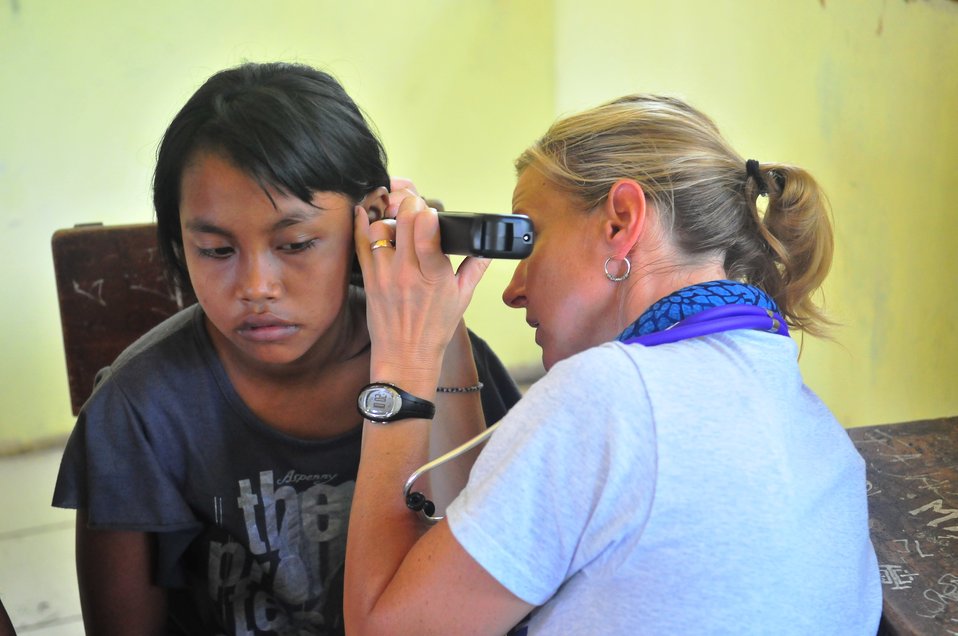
Project HOPE Nurse Practitioner Gabrielle Seibel Gives an Ear Exam to an Indonesian Girl

Project HOPE nurse practitioner Gabrielle Seibel, currently embarked with the Military Sealift Command hospital ship USNS Mercy (T-AH 19), gives an ear exam to an Indonesian girl during a medical civic action program in support of Pacific Partnership 2010 in Tobelo, Indonesia, on July 15, 2010. Pacific Partnership 2010 is the fifth in a series of annual U.S. Pacific Fleet endeavors conducted in Indonesia as a disaster relief exercise to strengthen regional partnerships.